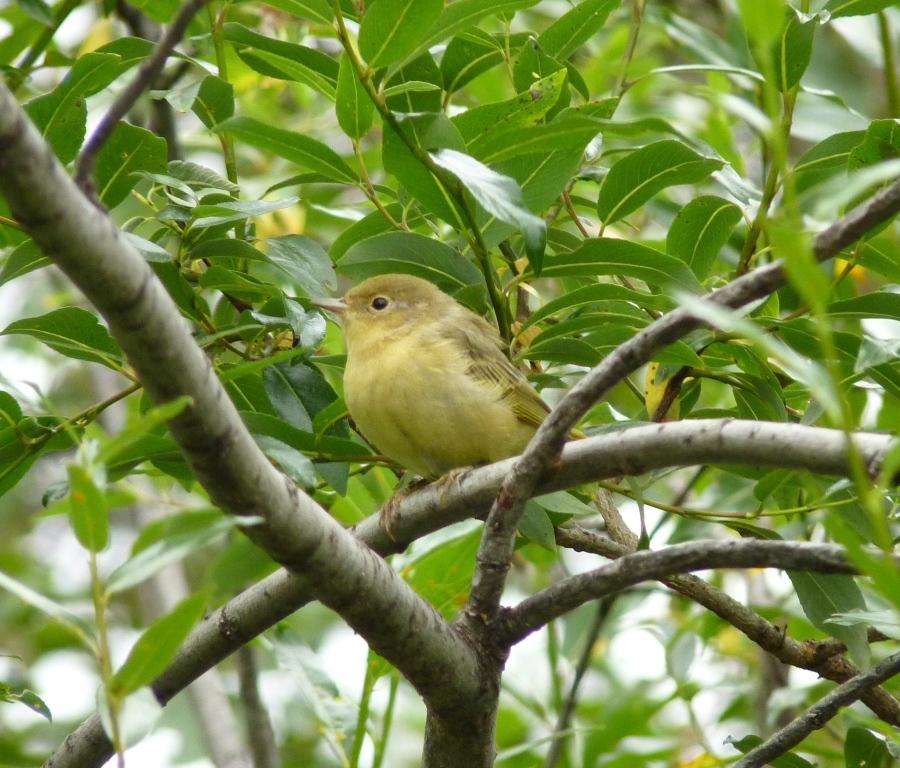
Yellow Warbler, Kwethluk River, Yukon Delta National Wildlife Refuge
Photo Credit: Kristine Sowl
USFWS, Yukon Delta National Wildlife Refuge